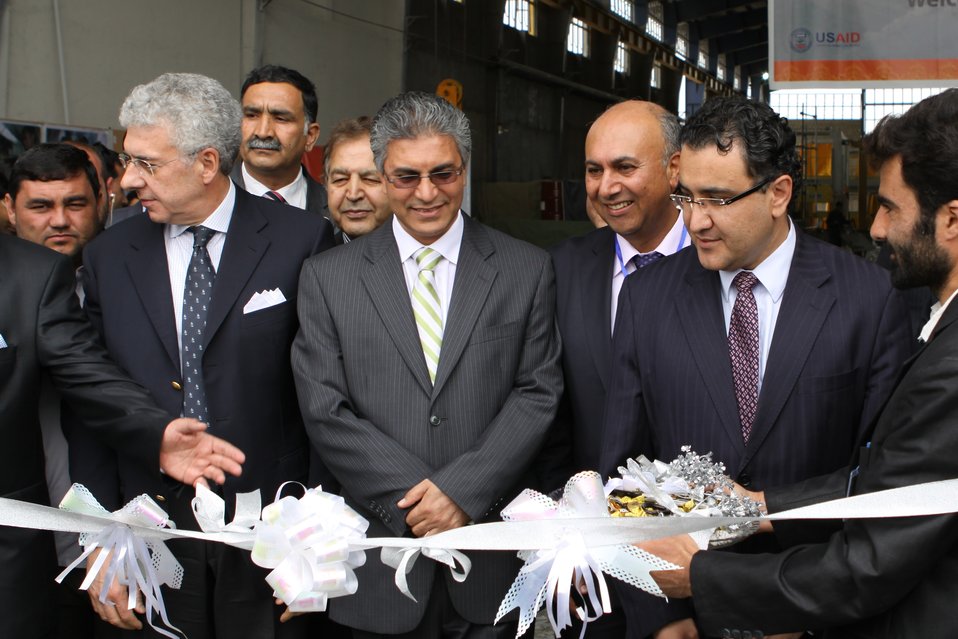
100525 Hirat Marble Conference 062